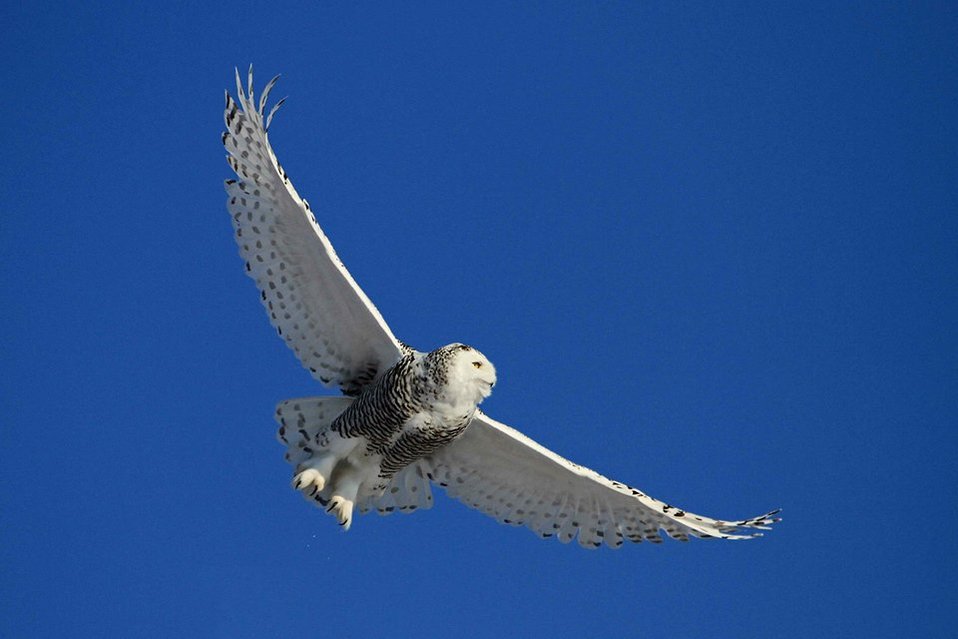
Hamden Slough Refuge

Hemden Slough National Wildlife Refuge, MN Credit: Lee Kensinger